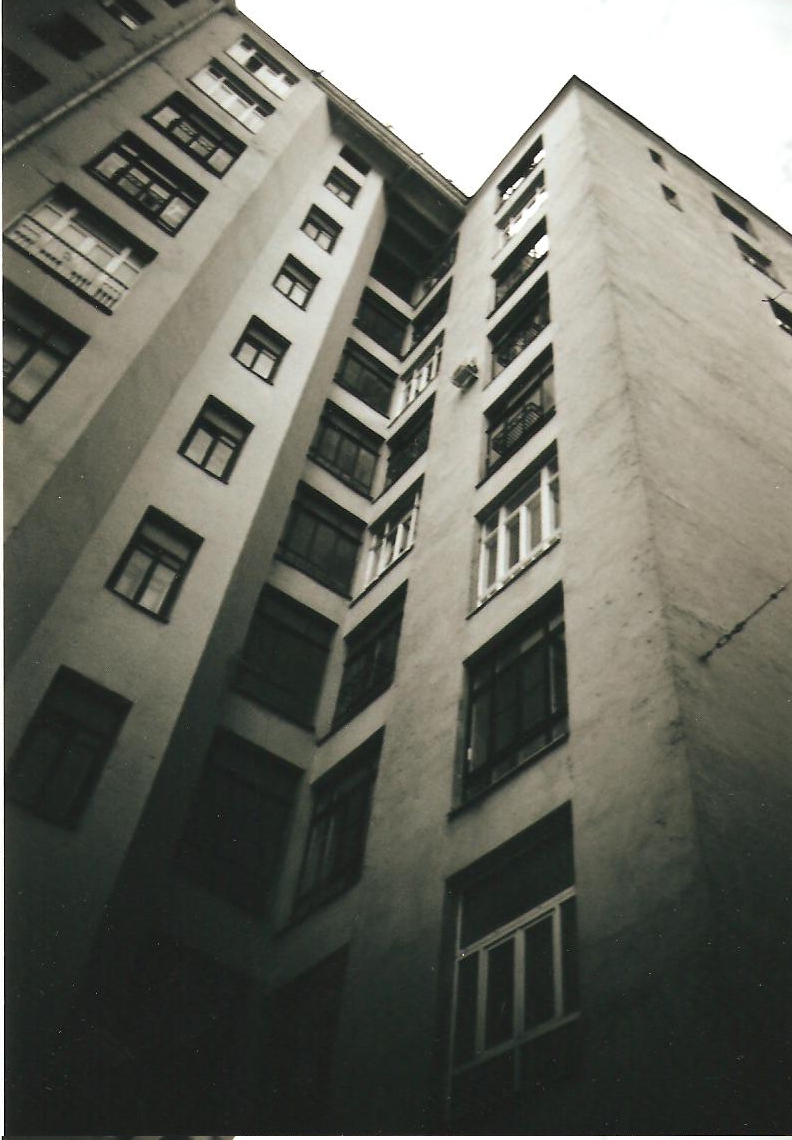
Русский: Москва, Большой Гнездниковский переулок, дом 10. Вид со двора.